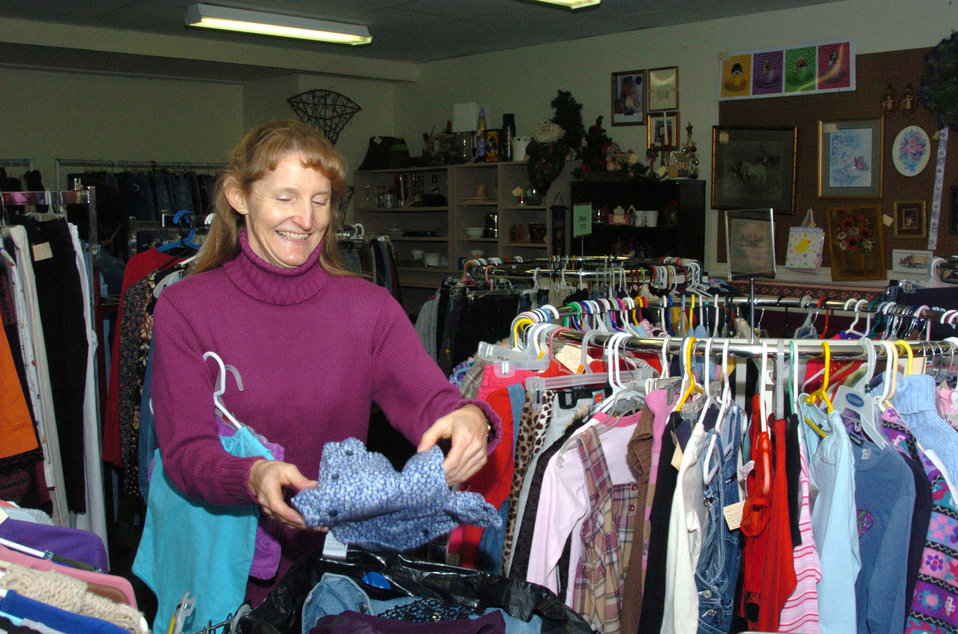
Healthier through helping: Volunteerism adds to life

Carlee Ivey puts clothes on hangers as she volunteers at the thrift shop at Altus Air Force Base, Okla.